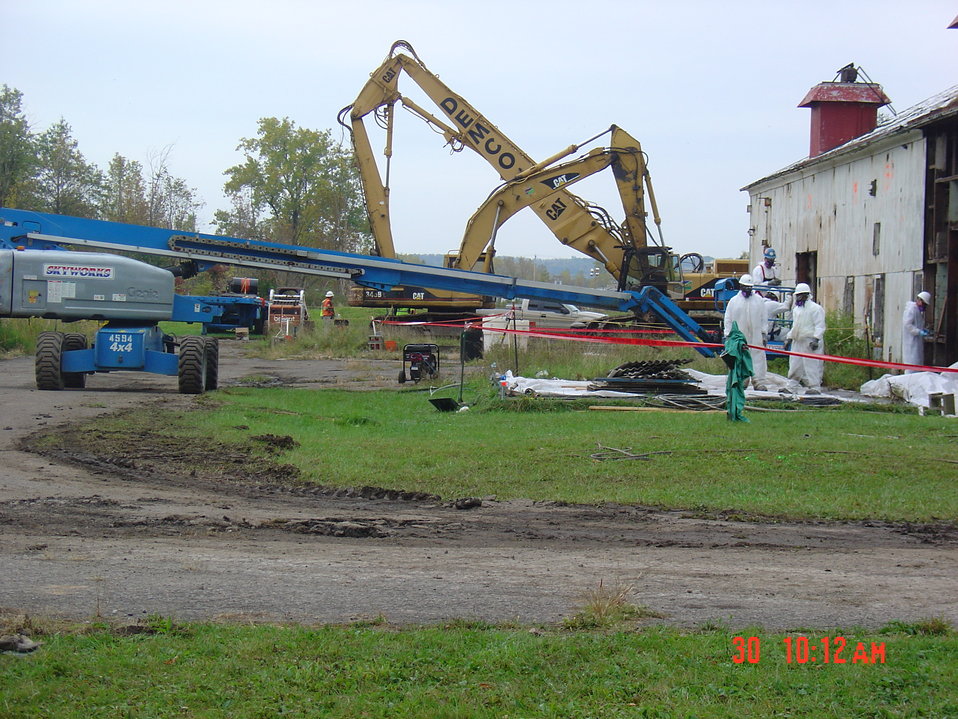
BLDG 401 ASBESTOS REMOVAL AND EQUIPMENT.

Activities from the Niagara Falls Storage Site, which is associated with the former Lake Ontario Ordnance Works. Formerly Utilized Sites Remedial Action Program (FUSRAP), a program initiated in 1974 to identify, investigate and clean up or control sites that were part of the Nation's early atomic energy and weapons program. Activities at the sites that are eligible for FUSRAP were conducted by Manhattan Engineer District (MED) or the Atomic Energy Commission (AEC), both predecessors of the Department of Energy (DOE). The U.S. Army Corps of Engineers was assigned management of FUSRAP by Congress in 1997.